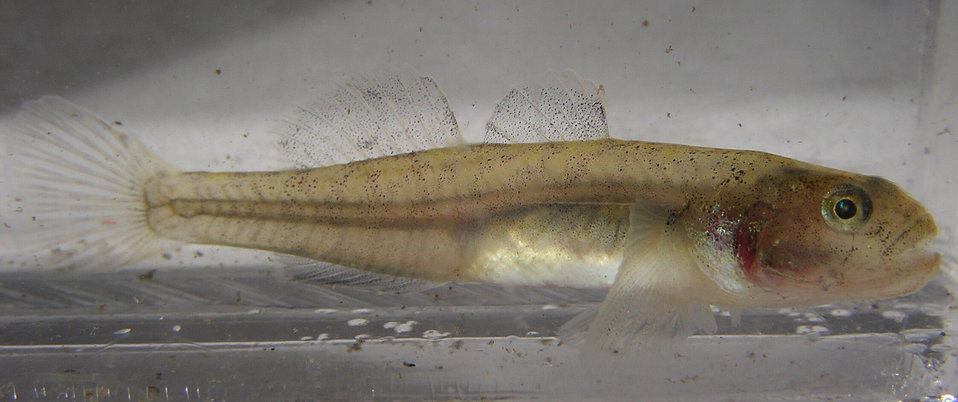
Tidewater Goby - USFWS4